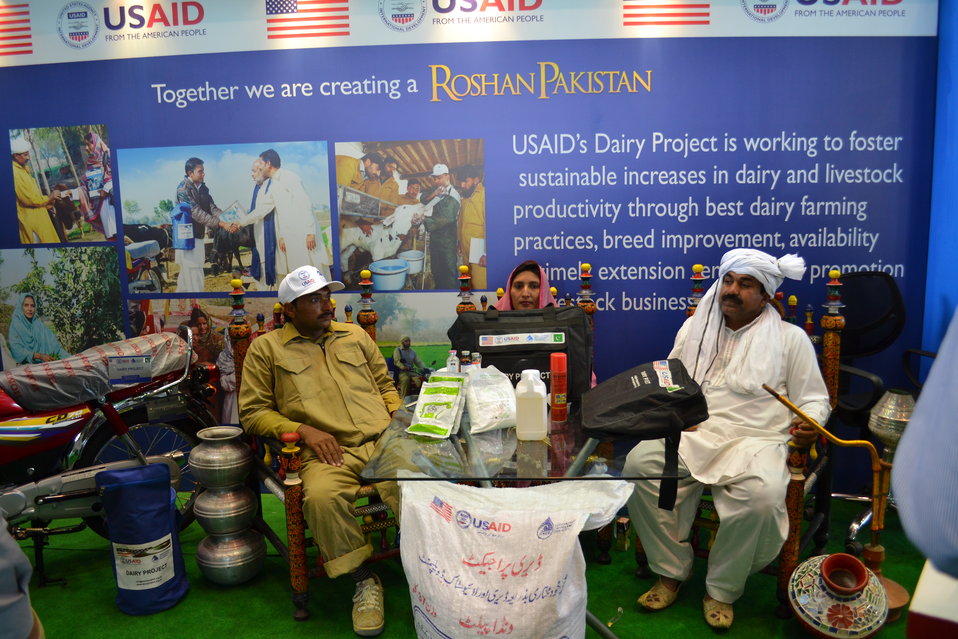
Dairy Project at Dawn Expo 2014